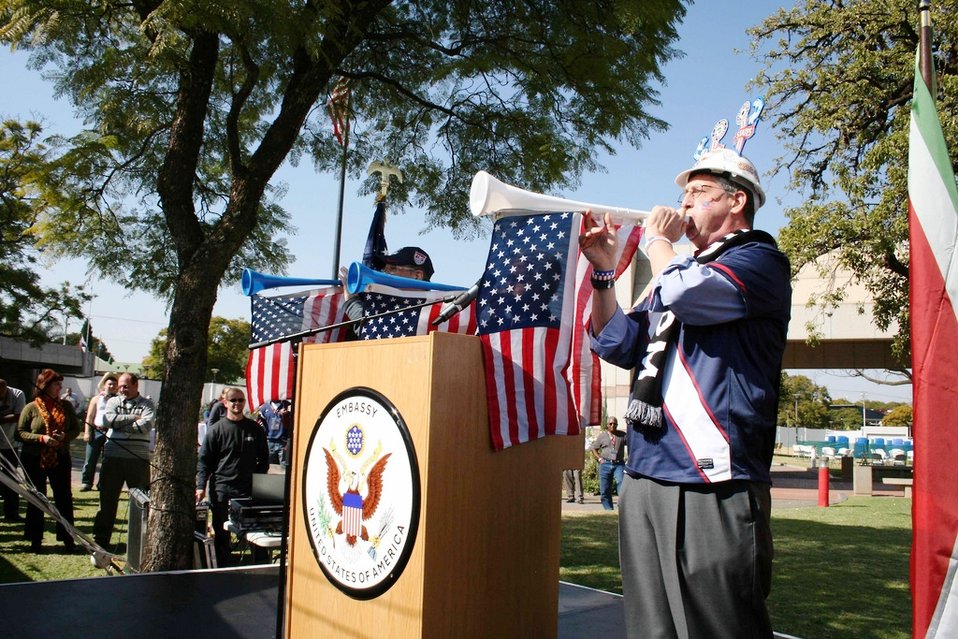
Ambassador Gips Blows the Vuvuzela

U.S. Ambassador to South Africa Donald Gips blows the vuvuzela at the Team USA pep rally before the U.S. vs. Algeria World Cup match on June 23, 2010, in Pretoria, South Africa.